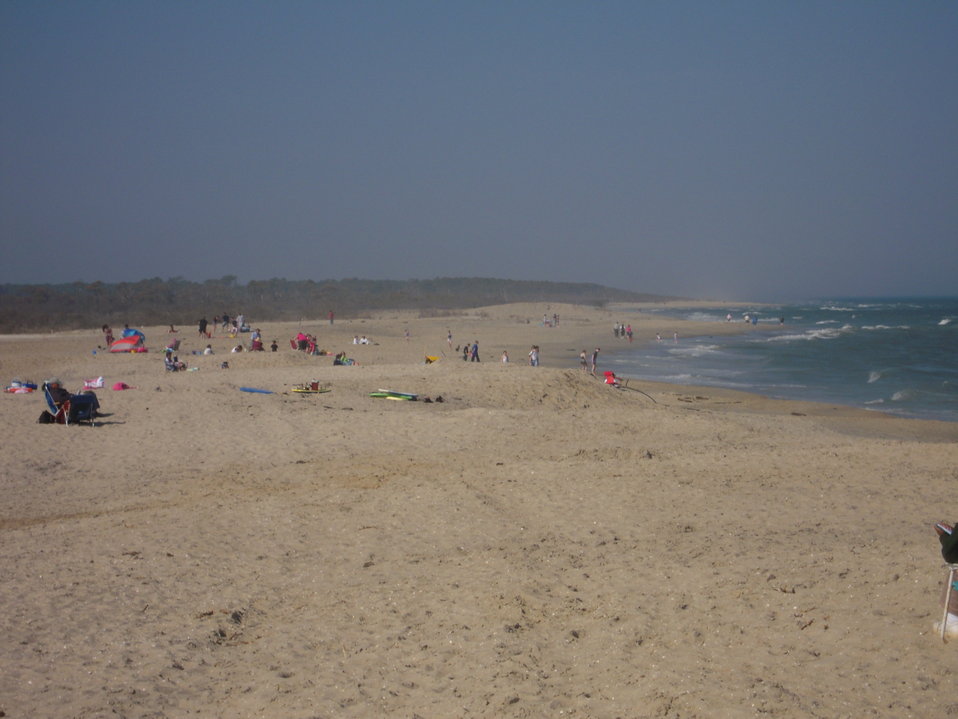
Beach at Chincoteague National Wildlife Refuge, located at the southern end of Assateague Island, Virginia.